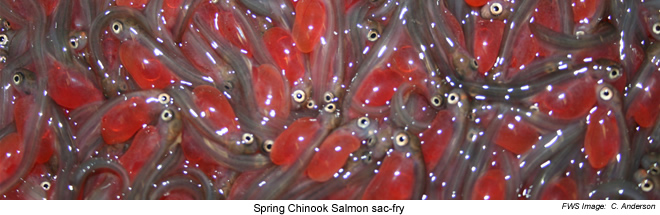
Sac Fry - Spring Chinook Salmon